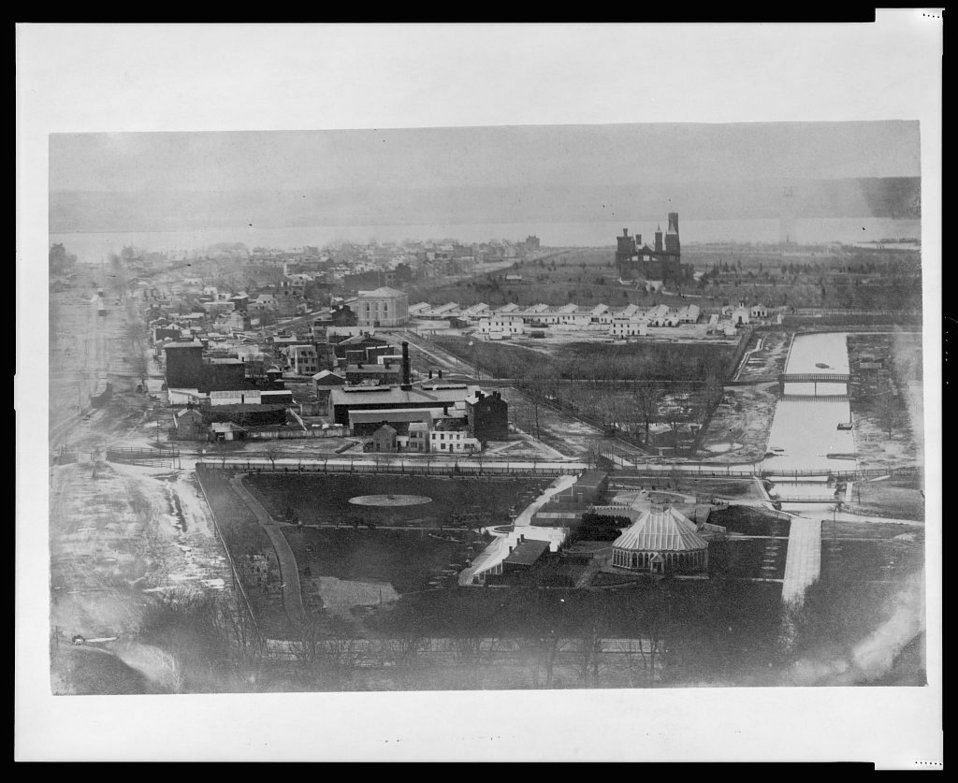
View from Capitol c.1863 with Botanic Garden

From Library of Congress Collection. View from atop Capitol looking West-southwest view with Maryland Ave. SW and B Street SW (i.e., Independence Ave. SW) to the left, Maine Ave., 3rd, 4 1/2, and 6th streets SW to the center; view includes The Mall, Washington Armory, Armory Square Hospital, Smithsonian Castle, Washington Canal, Botanic Garden, Gas Works, Washington Monument, under construction, and the Potomac River.